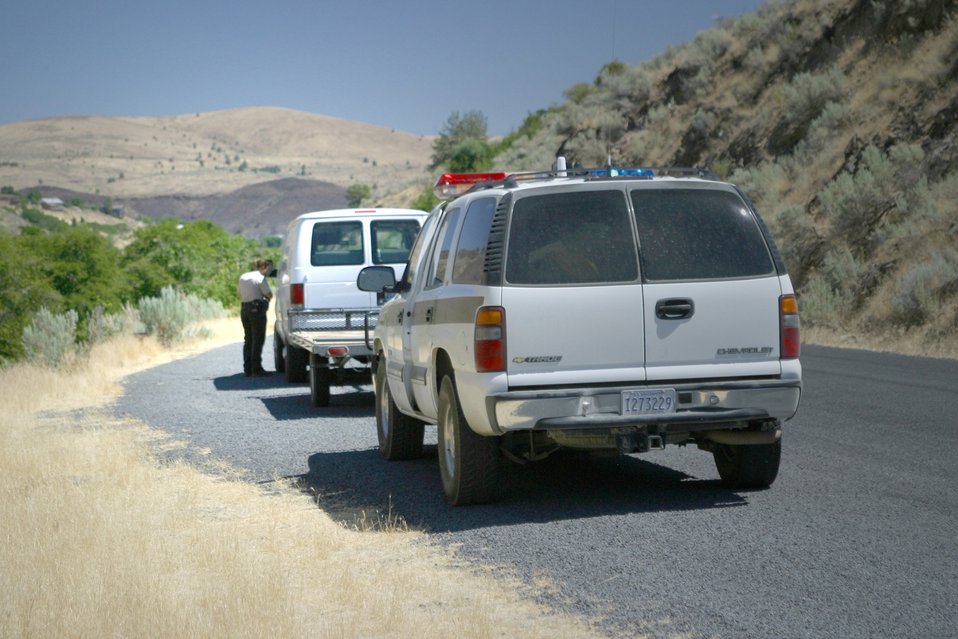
BLM Law Enforcement Rangers patrol the Lower Deschutes river and issue citations when necessary.